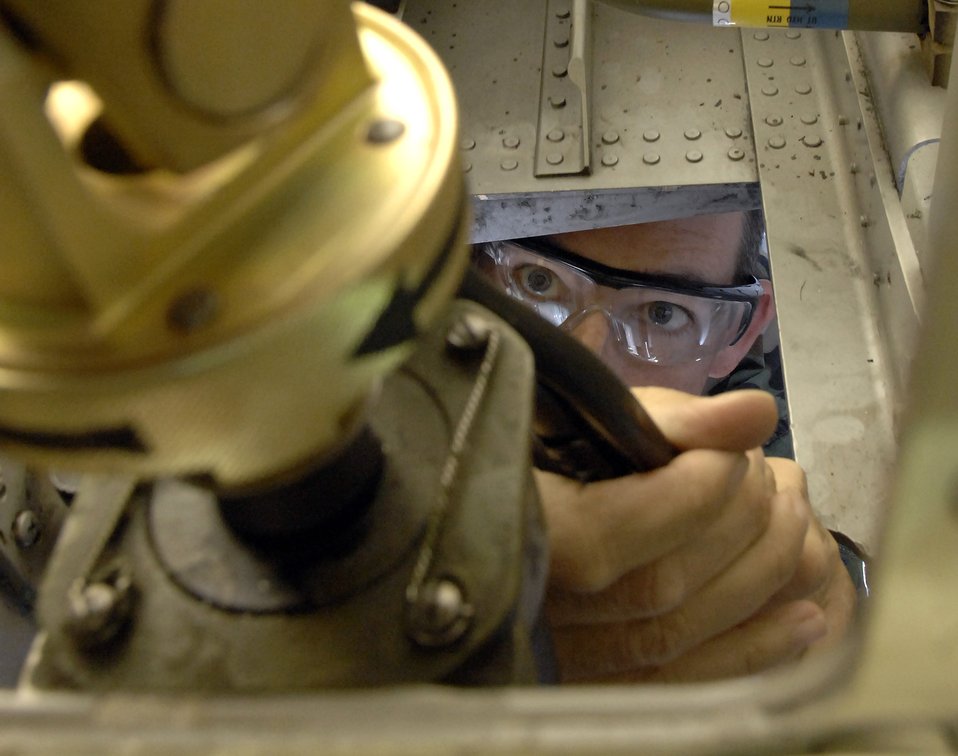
Training to make a herculean effort

Tech. Sgt. Shawn Taillon, instructor crew chief, wires the quick-disconnect for the main landing gear on the C-130 model trainer at Little Rock, Air Force Base, Ark., Nov. 1. In emergency situations, this allows the crew to drop the landing gear if the manual hand crank is not working. Sergeant Taillon is an instructor crew chief.